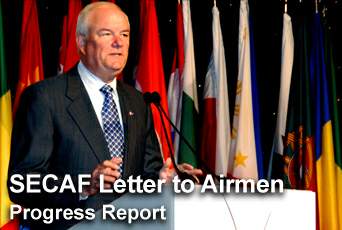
SECAF Michael W. Wynne

In the latest Letter to Airmen, Secretary of the Air Force Michael W. Wynne gives a progress report on modernizing the Air Force.